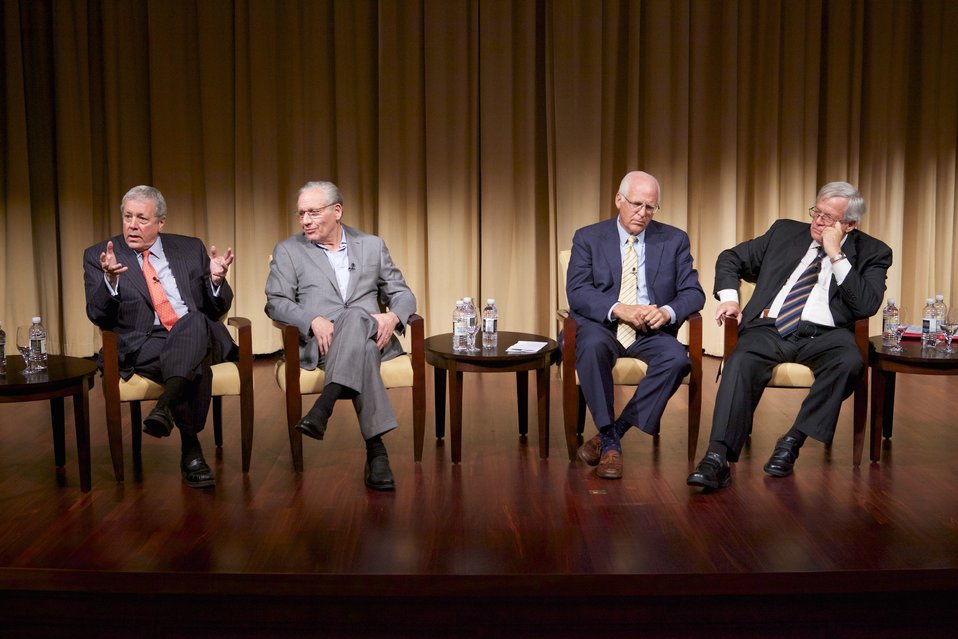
The Role of Congress in International Crises